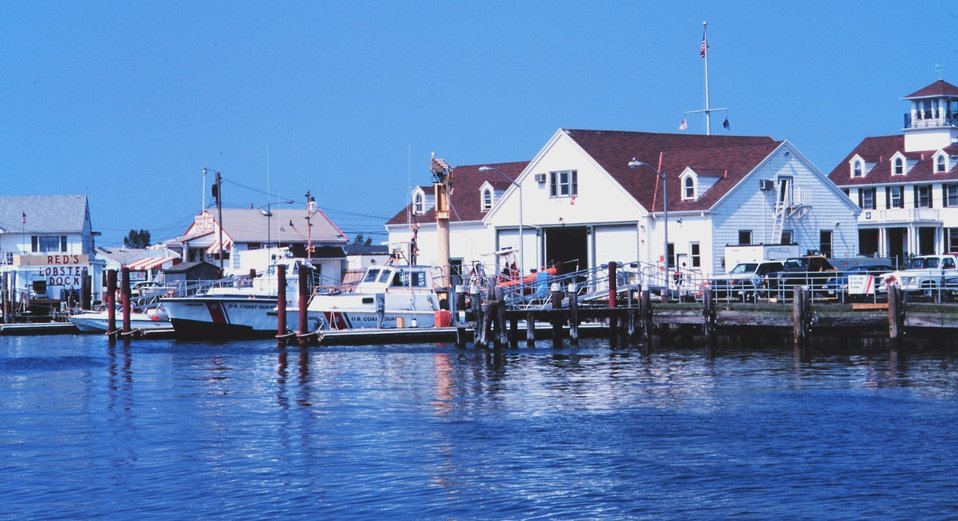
The U. S. Coast Guard Station